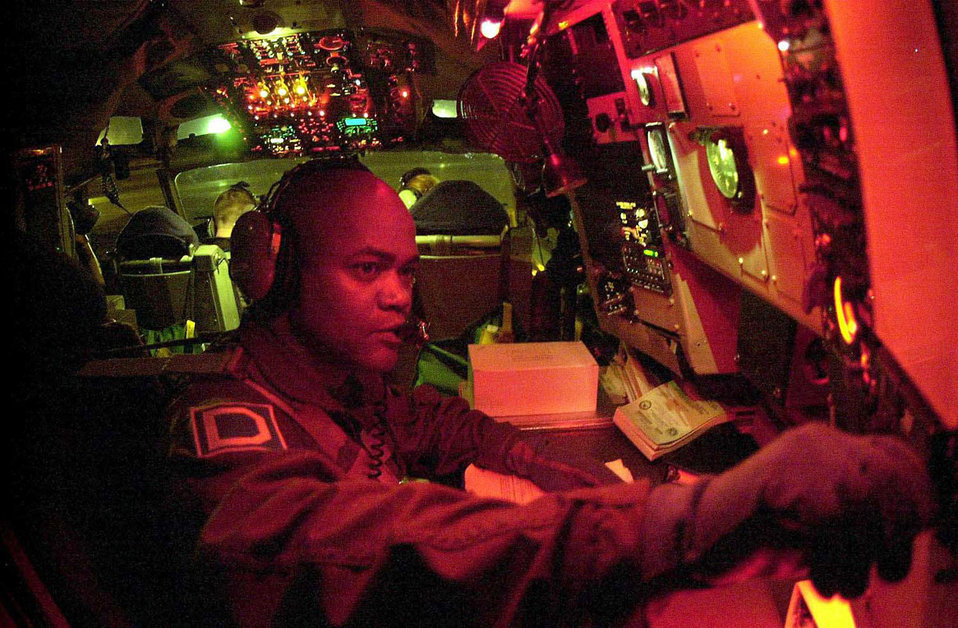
Boom Duty

OPERATION ENDURING FREEDOM -- Working under nighttime red light, a boom operator shuts down the Pacer Craig navigational system aboard his KC-135. The boom operator and the rest of his aircrew flew through the night passing fuel to several aircraft escorting two C-17 Globemaster III transport planes. The C-17s airdropped more than 27,000 humanitarian daily rations in eastern Afghanistan.